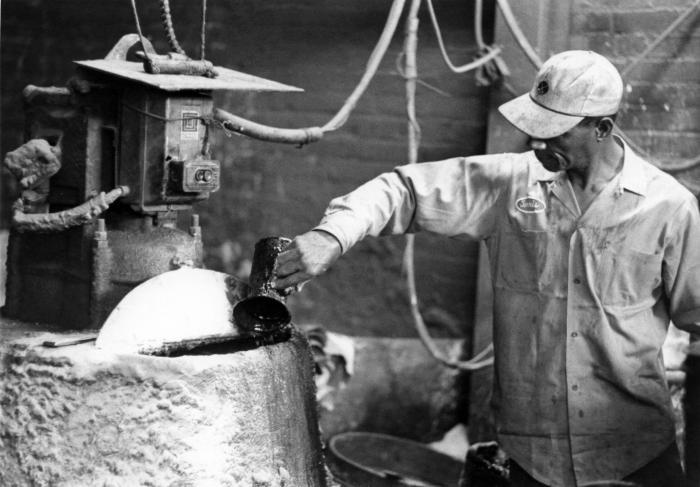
Thought to be from the 1970s, this historic image provided by the Center for Disease Control's (CDC), National Institute for Occupational Safety and Health (NIOSH), depicted an inductrial worker who was holding a container from which he was pouing an unknown substance into a vat. It looked as if there was an accumulation of mixed residue on the outside of the vat. The worker was not wearing any protective gear such as gloves, goggles, or filtered breathing mask, all of which may, or may not have been required based on whether or not any of the substances with which he was working were toxic.In gaining a better understanding of workplace hazards, through hands-on and on-site information acquisition, protocol-formulating bodies such as NIOSH, are better able to create a safer workplace through substantiation of appropriate safety regulations.